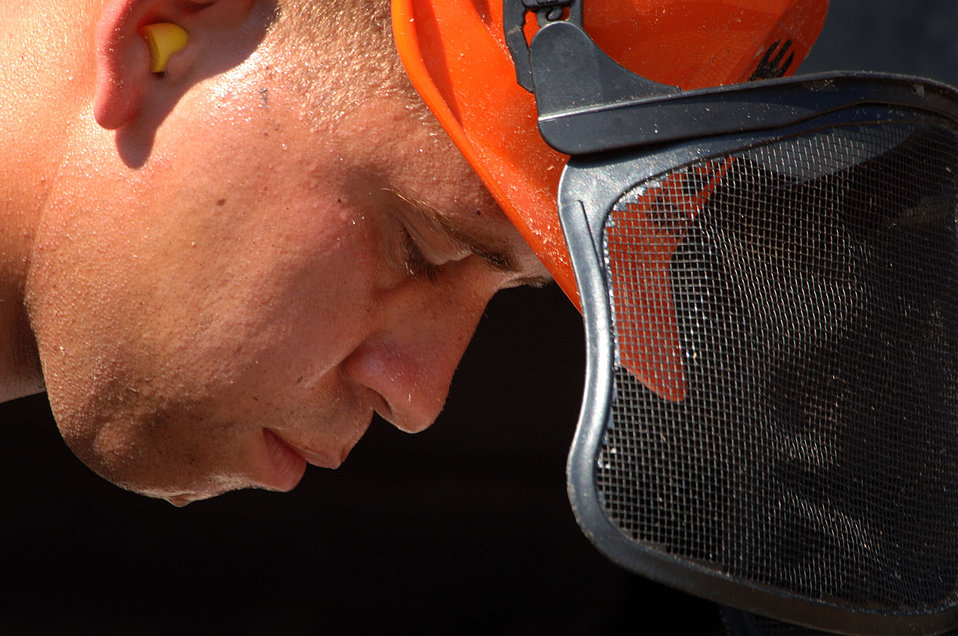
Keesler cleanup going well

KEESLER AIR FORCE BASE, Miss. -- Staff Sgt. David Torres tightens and adjusts his chainsaw before starting another day of clearing and removing fallen trees from the base housing area here. More than 90 Airmen from the 823rd Red Horse Squadron at Hurlburt Field, Fla., are deployed here to help with the base's hurricane recovery effort.